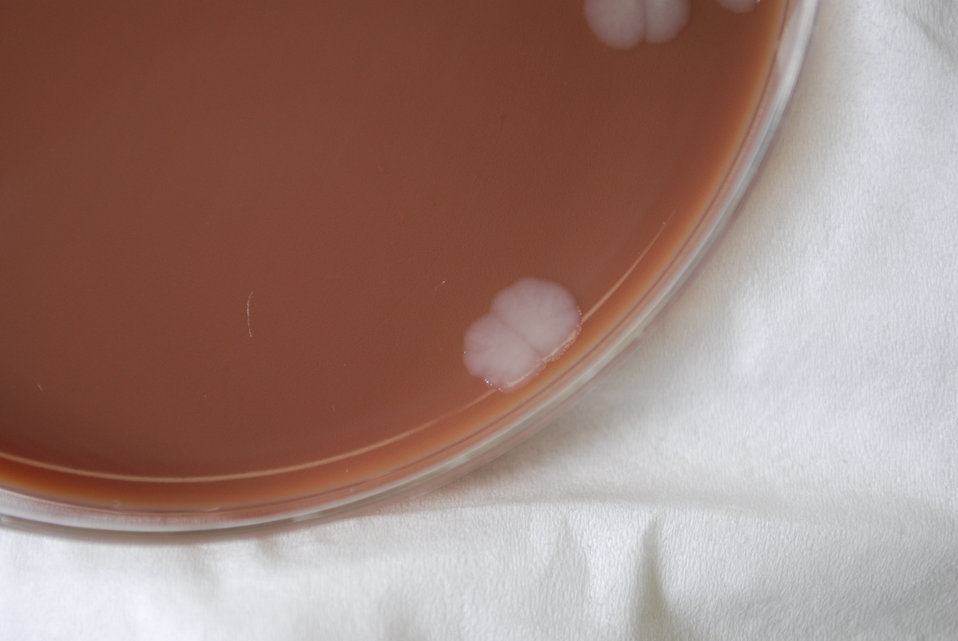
As a closer view of PHIL 12271, this photograph depicts the colonial morphology displayed by Gram-negative Burkholderia mallei bacteria, which was grown on a medium of chocolate agar, for a 72 hour time period, at a temperature of 37�C. B. mallei is the bacterium responsible for causing the infectious disease known as glanders.